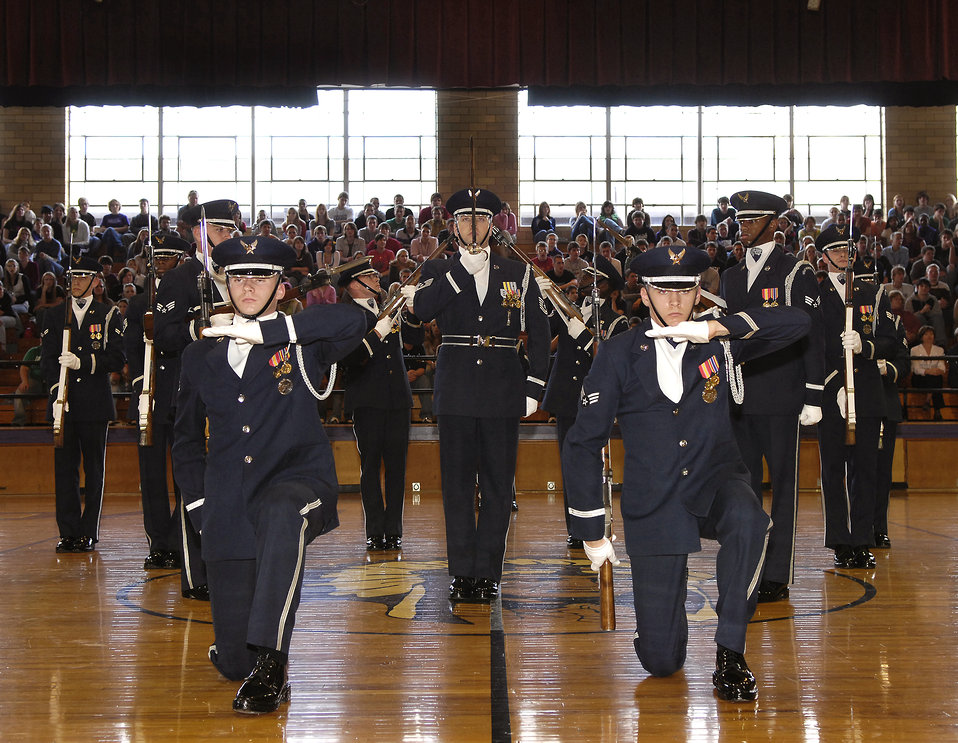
Airman inspiration

The U.S. Air Force Honor Guard Drill Team performed for students Dec. 12 at Mascoutah High School in Mascoutah, Ill. The Drill Team travels stateside and abroad performing drills for public and military audiences to recruit and inspire current and future Airmen.